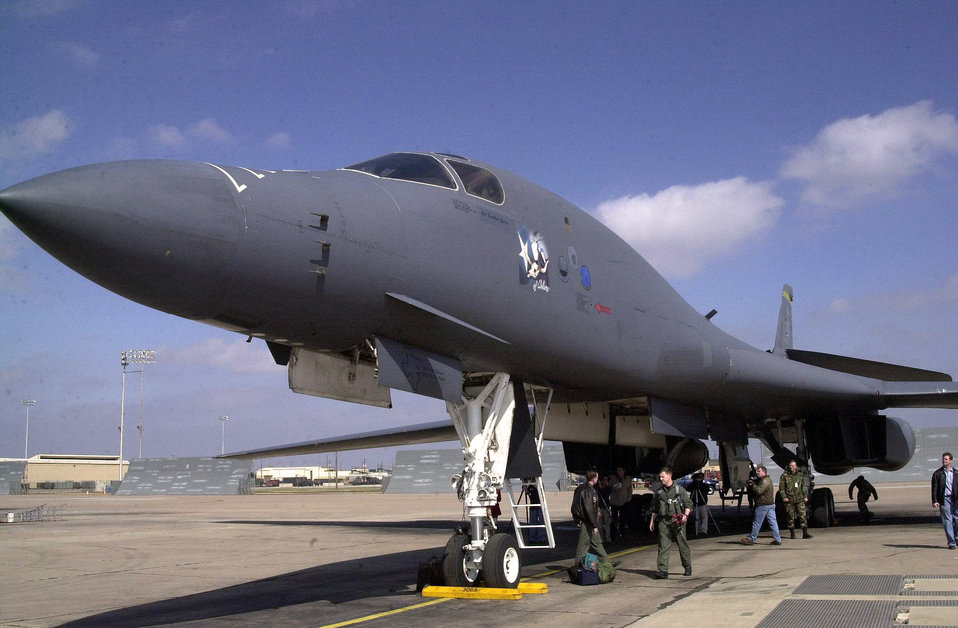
B-1 commemorates its 20th at Dyess

DYESS AIR FORCE BASE, Texas -- The first operational B-1B Lancer in the Air Force, also known as the Star of Abilene, sits on the flightline here after flying its last mission in 2003. The base celebrated the bomber's 20th anniversary June 29.